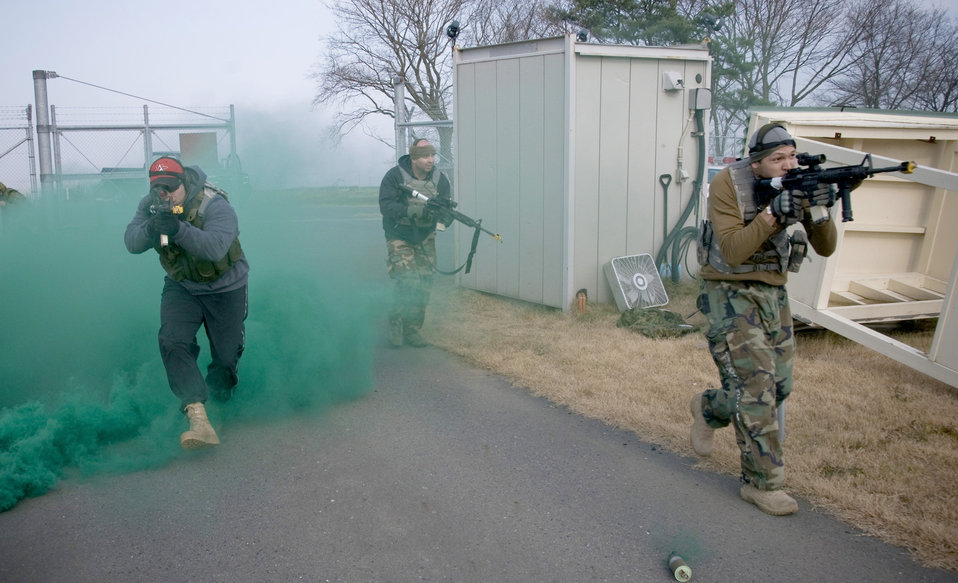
Guard and Protect

Senior Airman Kevin Gonzales searches Senior Airman William Holliday during a bilateral guard and protect exercise Dec. 4, 2010, at Misawa Air Base, Japan. Opposing forces simulated hostile enemy actions against Japan Ground Self-Defense Force, Air Self-Defense Force and the 35th Security Forces members during the exercise to test the combined force's ability to protect Misawa AB's war-fighting assets. Airman Gonzales is a 35th SFS patrolman 3and Airman Holliday is from the 5th Civil Engineer Squadron Explosive Ordnance Disposal flight and opposing forces volunteer.